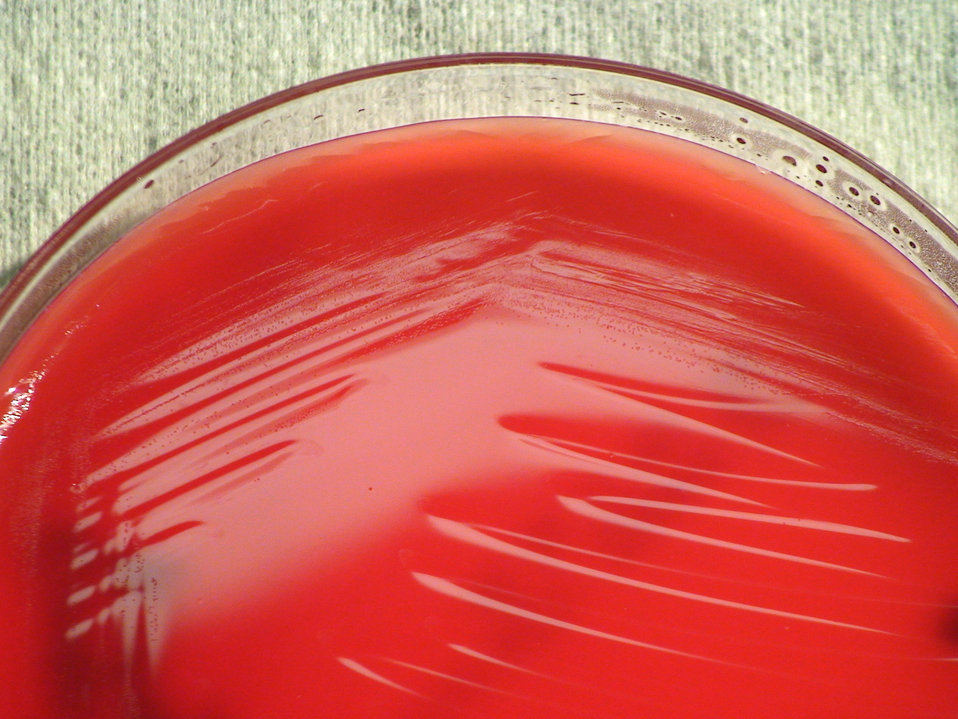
As a closer view of PHIL 12450, this photograph depicts the colonial morphology displayed by Gram-negative Kingella kingae bacteria, which was grown on a medium of sheep's blood agar (SBA), for a 24 hour time period, at a temperature of 37�C.